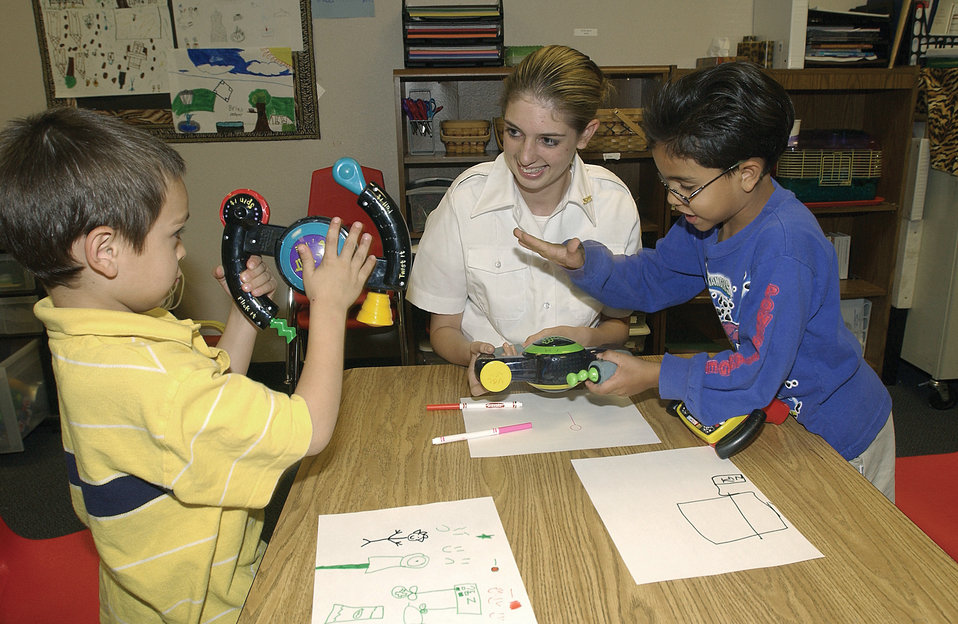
Babysitting club teaches teens responsibility

NELLIS AIR FORCE BASE, Nev. -- Jennifer Rooney, a babysitter club member, stops by the youth center here at the end of her school day to visit with the children and assist instructors.